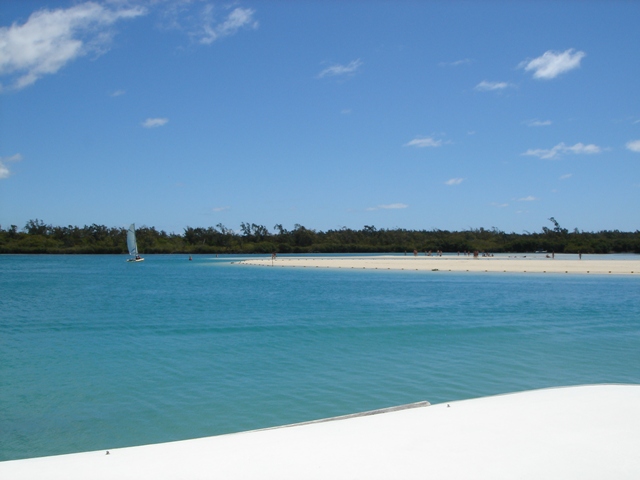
en:The beach at Ile aux Cerfs, Mauritius ja:イル・オ・セルフのビーチ Taken by (WT-shared) Shoestring in September, 2006 Location: Ile aux Cerfs